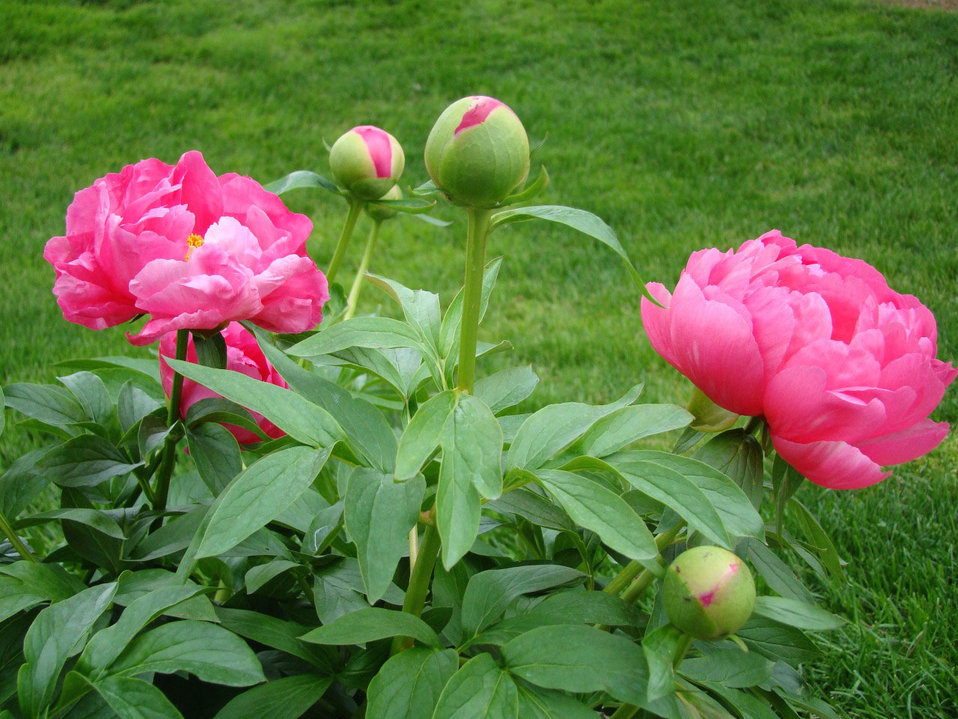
Peony buds

Garden pink peonies with buds.